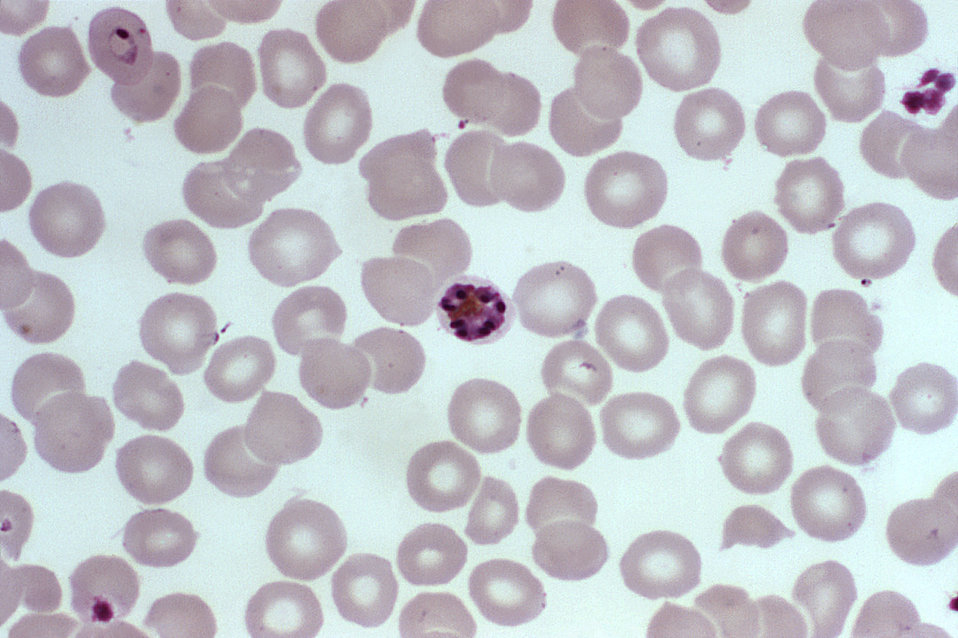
This photomicrograph shows a mature Plasmodium malariae schizont within an infected RBC.